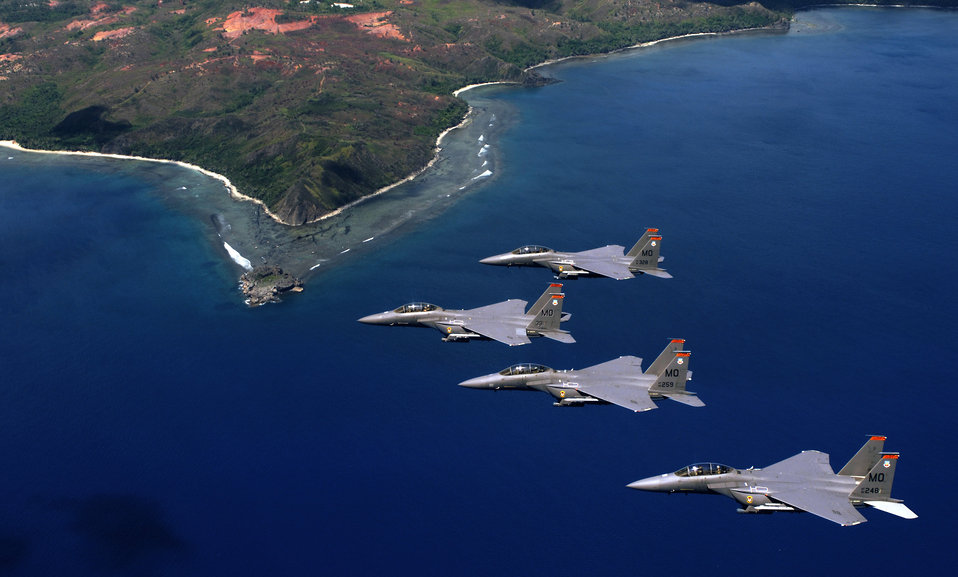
Soaring like an Eagle

OVER GUAM -- Four F-15E Strike Eagles fly in formation over the southern point of Guam after completing aerial training here June 16. They are assigned to the 391st Expeditionary Fighter Squadron and are deployed from Mountain Home Air Force Base, Idaho.